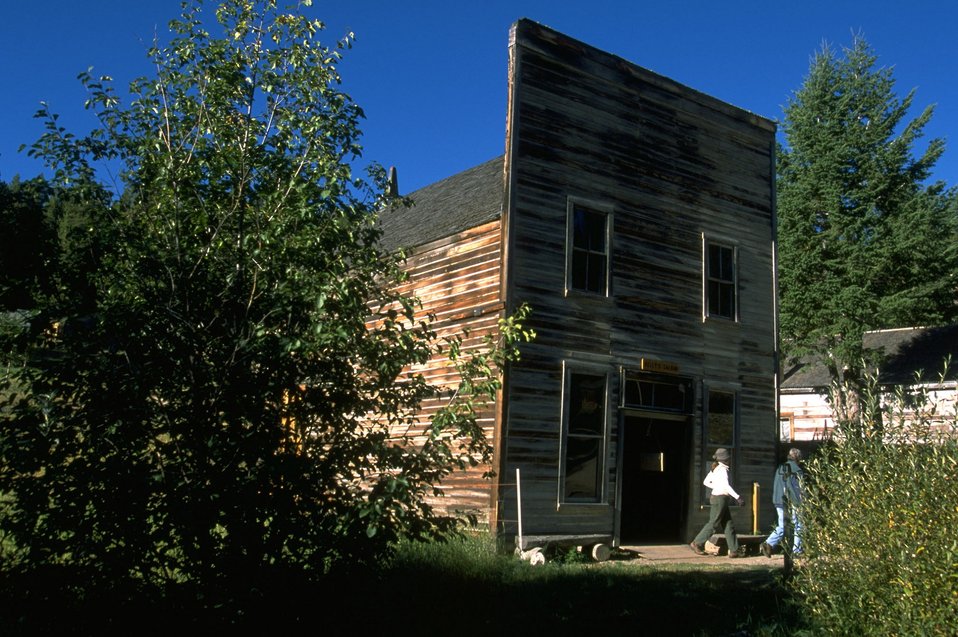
Kelly's Saloon in Garnet Ghost Town